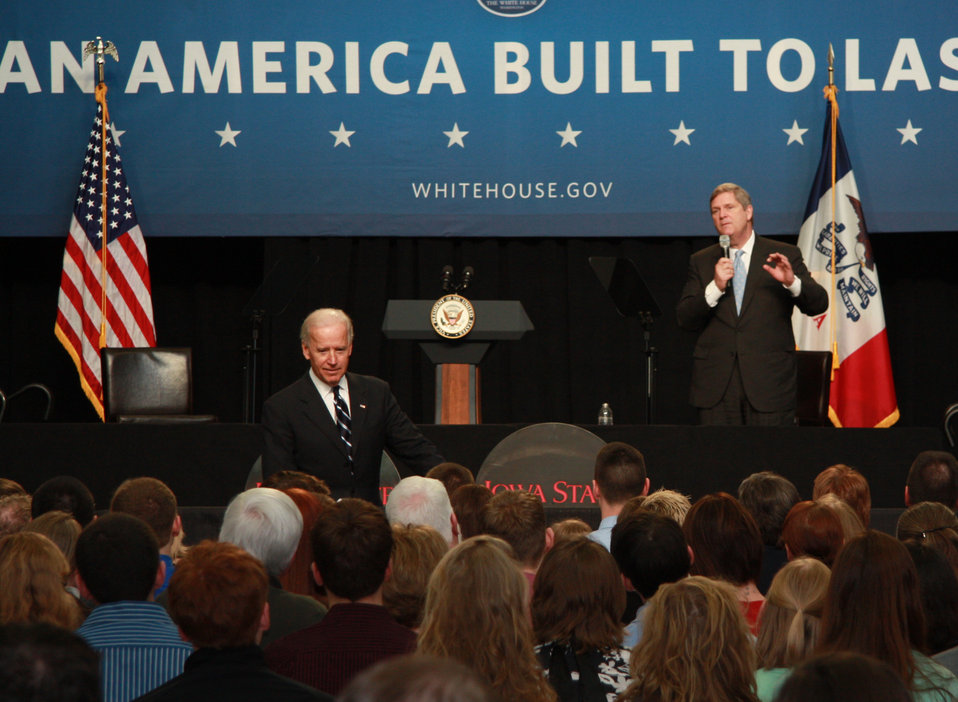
Agriculture Secretary Tom Vilsack and Vice President Joe Biden spoke to a large gathering of students and faculty about the important role manufacturing has in the future success of our country at An America Built to Last event at Iowa State University on Thursday, March 1, 2012 in Ames, IA.